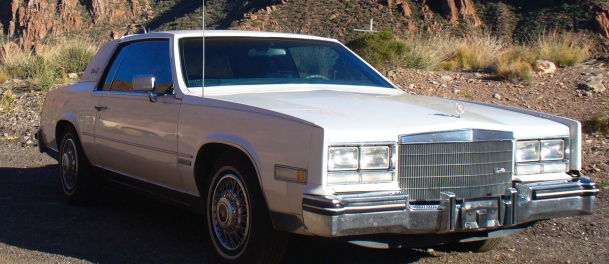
1983 Cadillac El Dorado